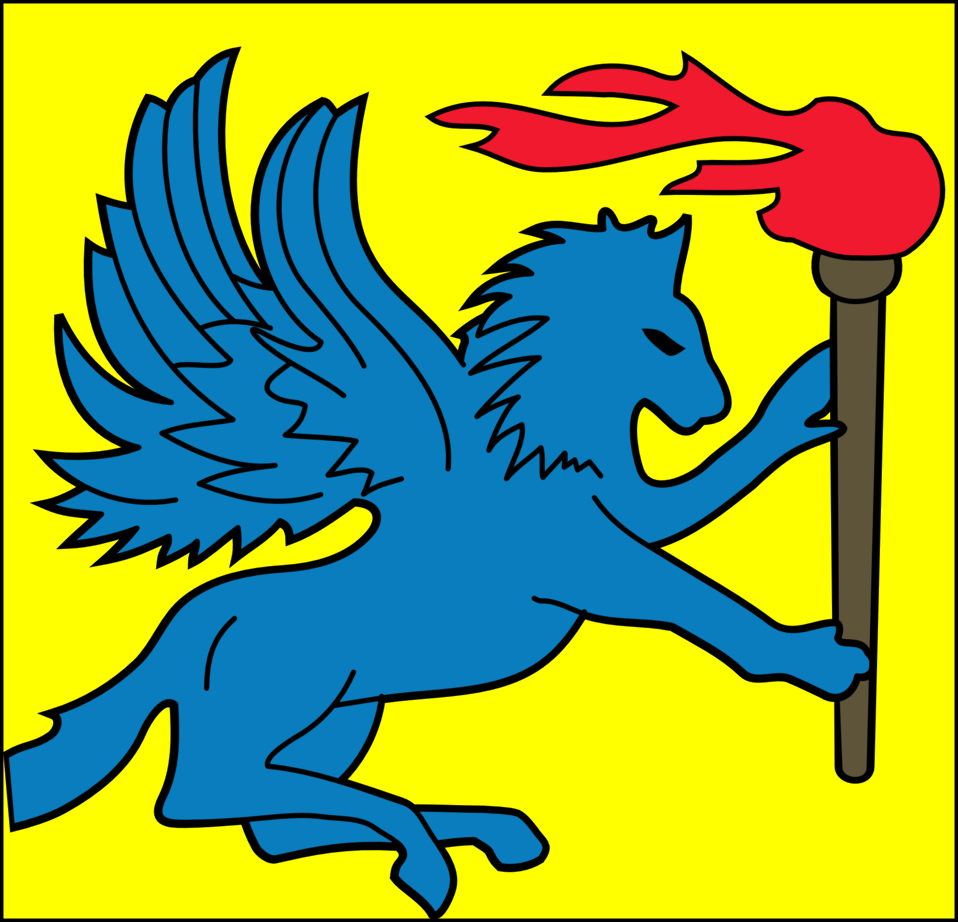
Italiano: Quadrupede chimerico alato con fiaccola, con la parte anteriore da leone e quella posteriore da cavallo, raffigura il distintivo della '10ª Squadriglia Farman'.